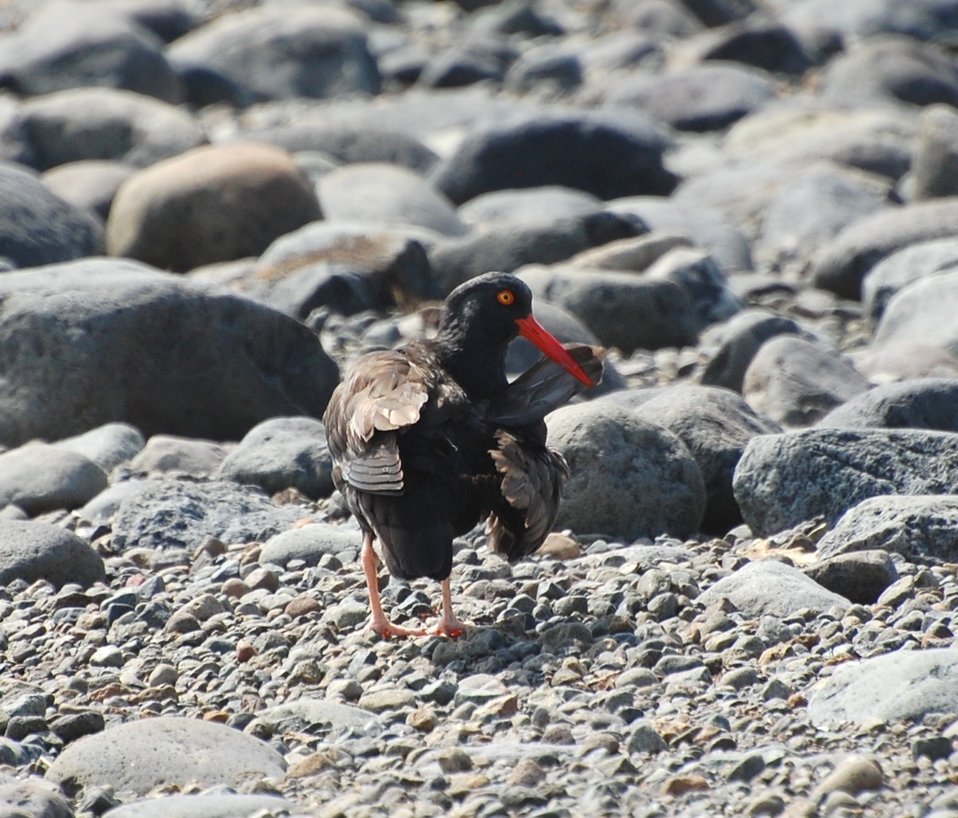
Black Oystercatcher

Kinzarof Lagoon, Izembek National Wildlife Refuge
Photo by Kristine Sowl,
USFWS, Public Domain